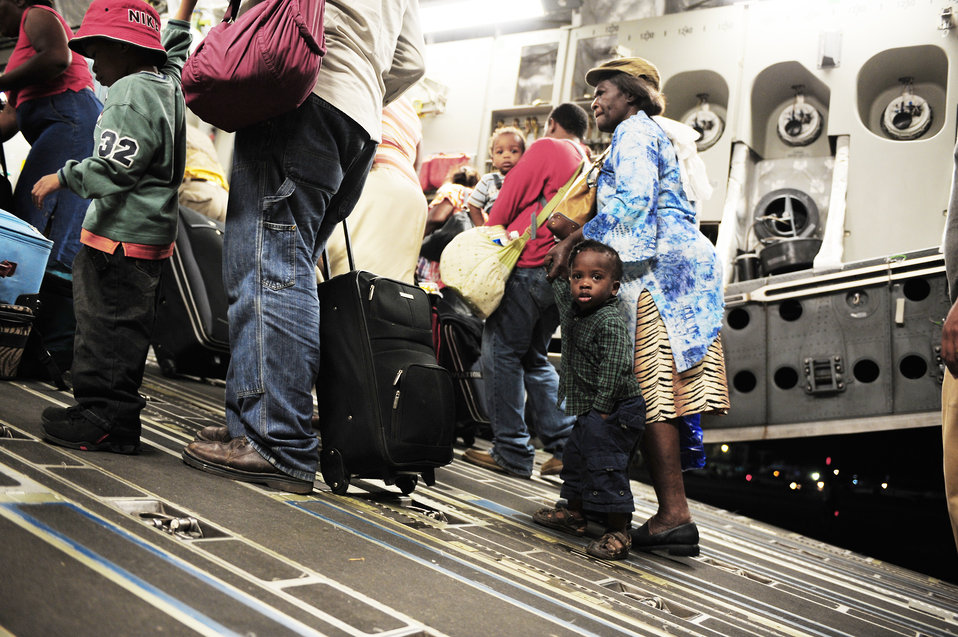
Haiti Earthquake Relief

Haitian-Americans are evacuated on a C-17 Globemaster III Jan. 18, 2010, from Toussaint L'Ouverture International Airport in Port-au-Prince, Haiti. The C-17 crew is assigned to the 729th Airlift Squadron at March Air Reserve Base, Calif. The aircraft is from the 452nd Air Mobility Wing at March ARB.